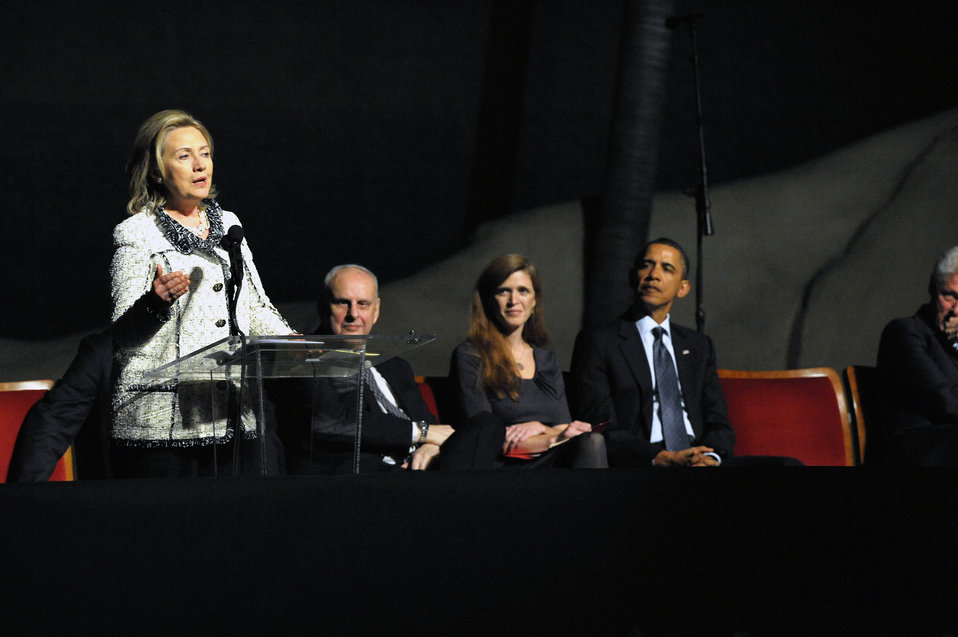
Secretary Clinton Delivers Remarks at Richard C. Holbrooke's Memorial Service

U.S. Secretary of State Hillary Rodham Clinton delivers remarks at the memorial service for Richard C. Holbrooke at the John F. Kennedy Center for the Performing Arts in Washington, D.C., on January 14, 2011. Former U.S. President Bill Clinton, right, and U.S. President Barack Obama, second from right, are sitting behind the Secretary.